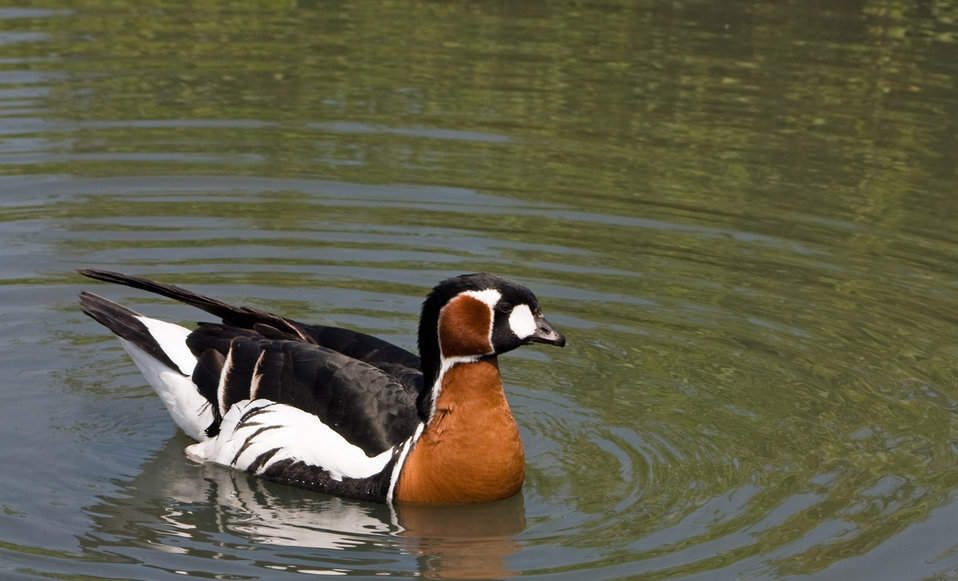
Duck on the water

Pretty duck or goose on the water.